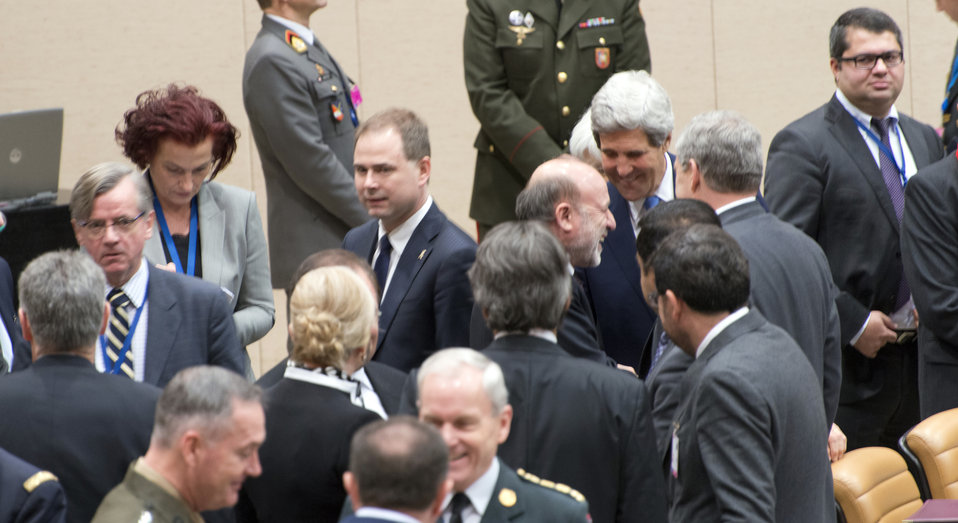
Secretary Kerry Speaks With Afghan Minister Daudzai

U.S. Secretary of State John Kerry speaks with Afghanistan Minister of Interior Mohammed Umer Daudzai during the start of the Internal Security Assistance Force (ISAF) meeting at NATO headquarters in Brussels, Belgium, on December 4, 2013.